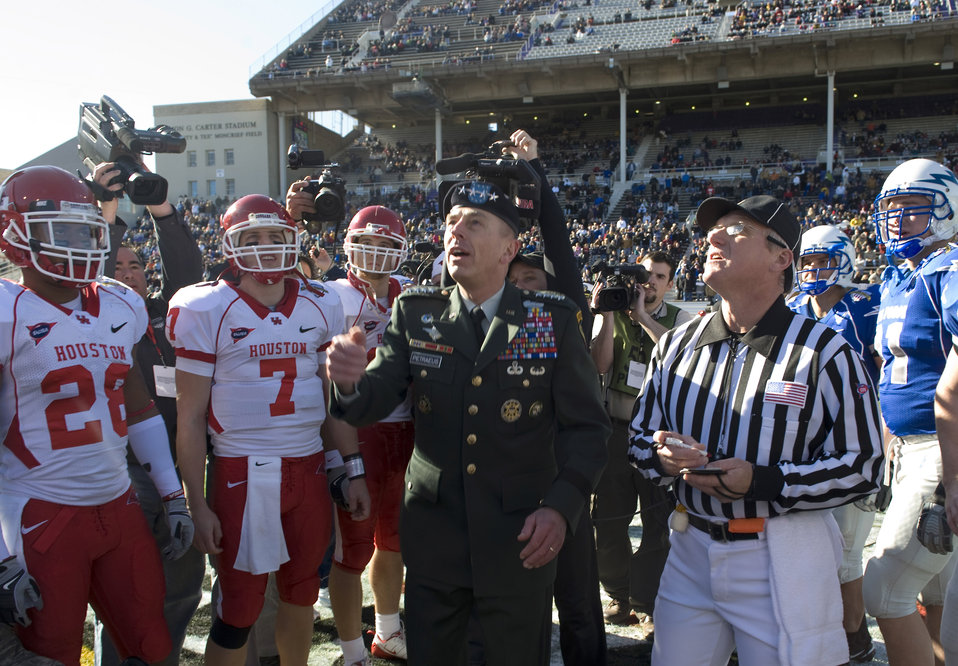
Armed Forces Bowl

U.S. Army Gen. David Petraeus, U.S. Central Command commander, performs the coin toss before the sixth annual Bell Helicopter Armed Forces Bowl Dec. 31 in Fort Worth, Texas. Taking part in the bowl game are the University of Houston Cougars and the U.S. Air Force Academy Falcons. Besides performing the coin toss, General Petraeus is being honored during the game's half-time event.